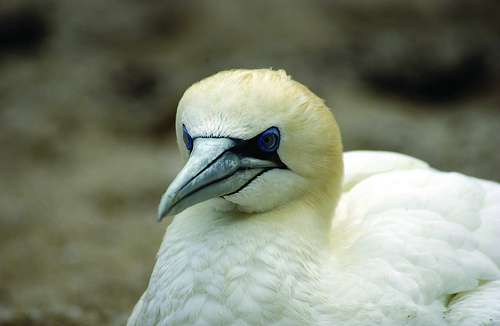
Gannet

Close-up of a gannet bird